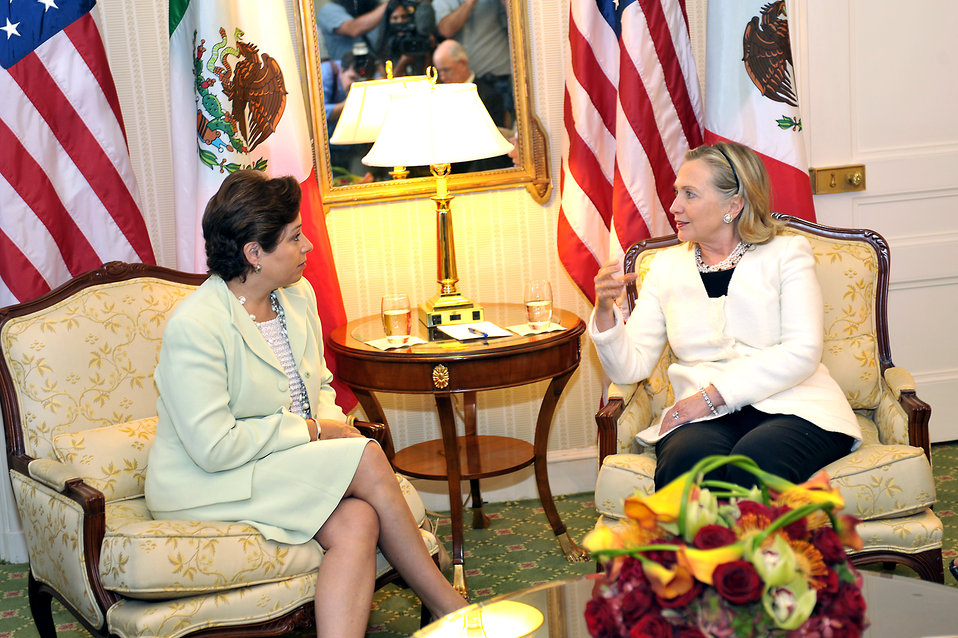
Secretary Clinton Holds a Bilateral Meeting With Mexican Foreign Minister Espinosa

U.S. Secretary of State Hillary Rodham Clinton holds a bilateral meeting with Mexican Foreign Minister Patricia Espinosa at the Waldorf Astoria in New York, New York, on September 20, 2010.